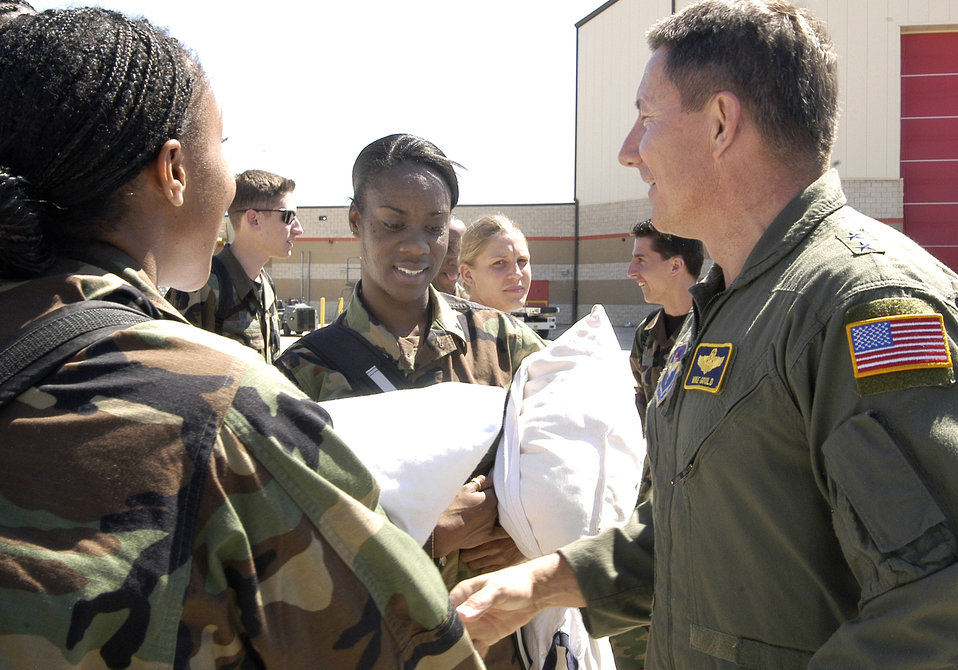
Alternate Spring Break 2006

Maj. Gen. Mike Gould welcomes Air Force Academy cadets to Keesler Air Force Base, Miss., Saturday, March 25, 2006. Approximately 140 cadets volunteered to give up their spring break to help rebuild the disaster struck area in Biloxi, Miss., and surrounding cities in support of hurricane relief efforts.